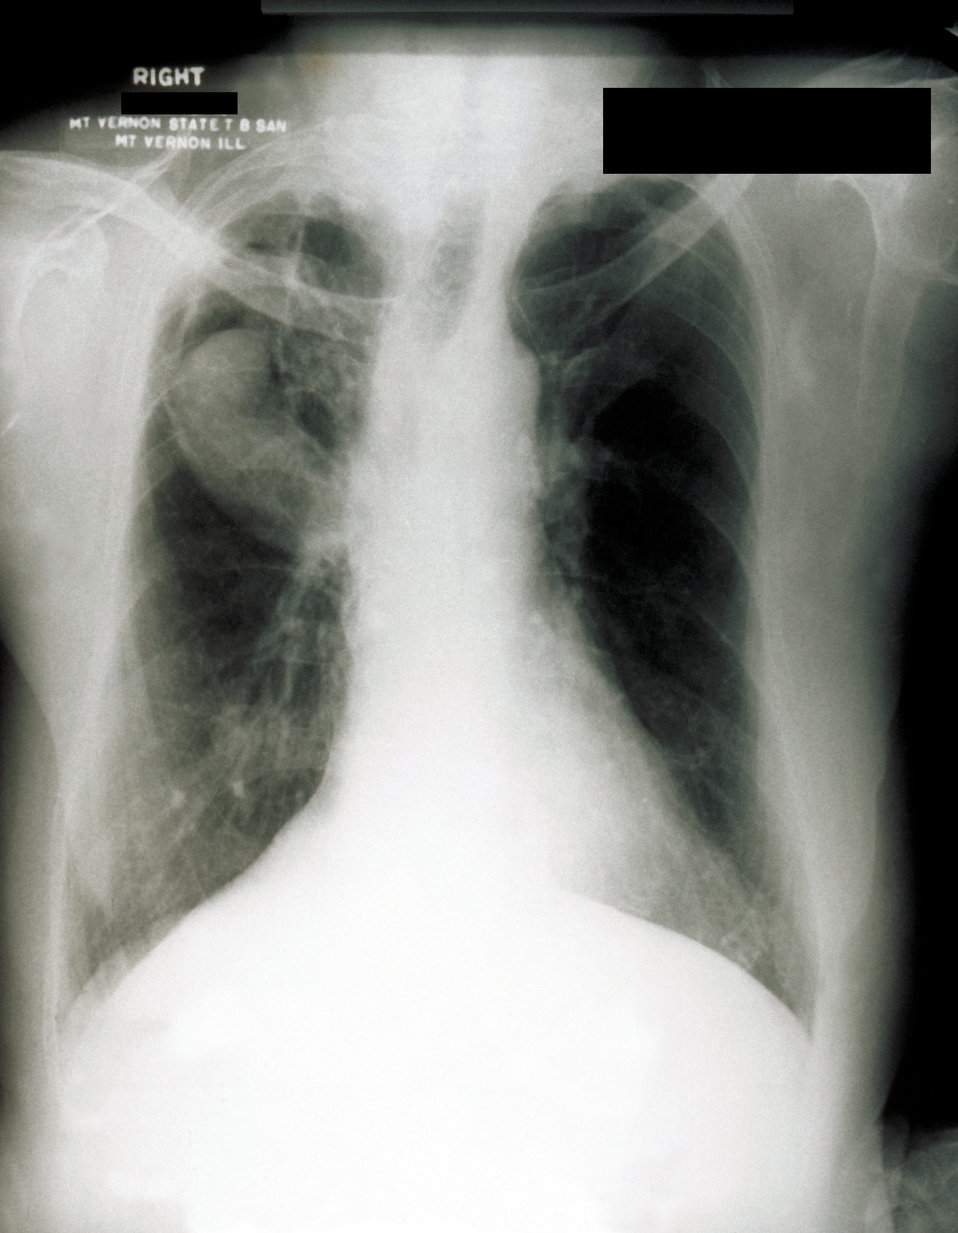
This chest radiograph shows probable aspergillosis with an aspergilloma, or fungus ball in the upper lobe of the right lung.